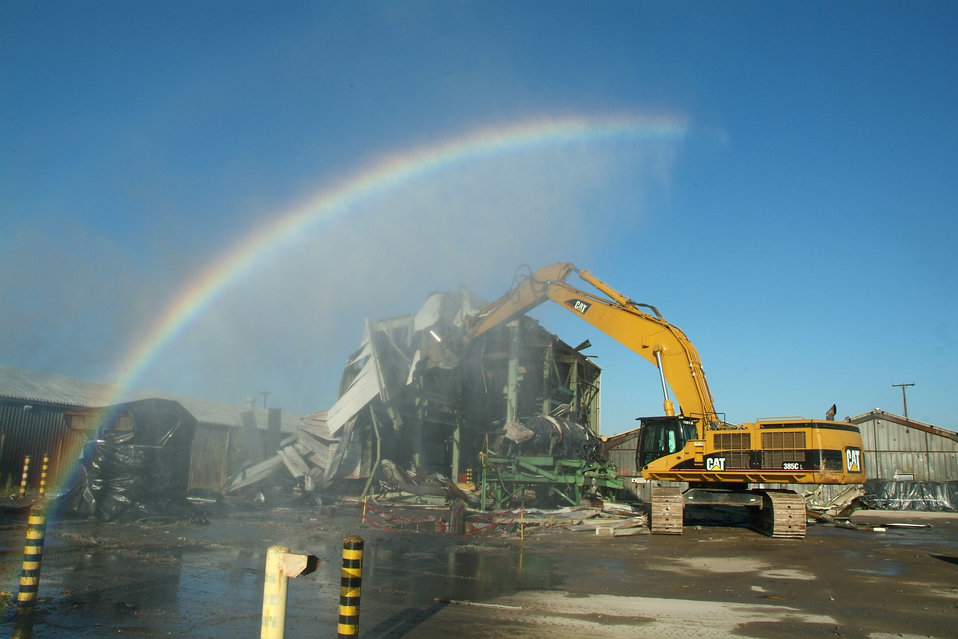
Smelter Demolition - Paducah

A rainbow appears over the Paducah Site’s East End Smelter, a 21,000-square-foot complex used until the 1980s to smelt metal. Recovery Act workers used heavy equipment to demolish the smelter in September 2010, a year ahead of schedule and $10 million under budget.